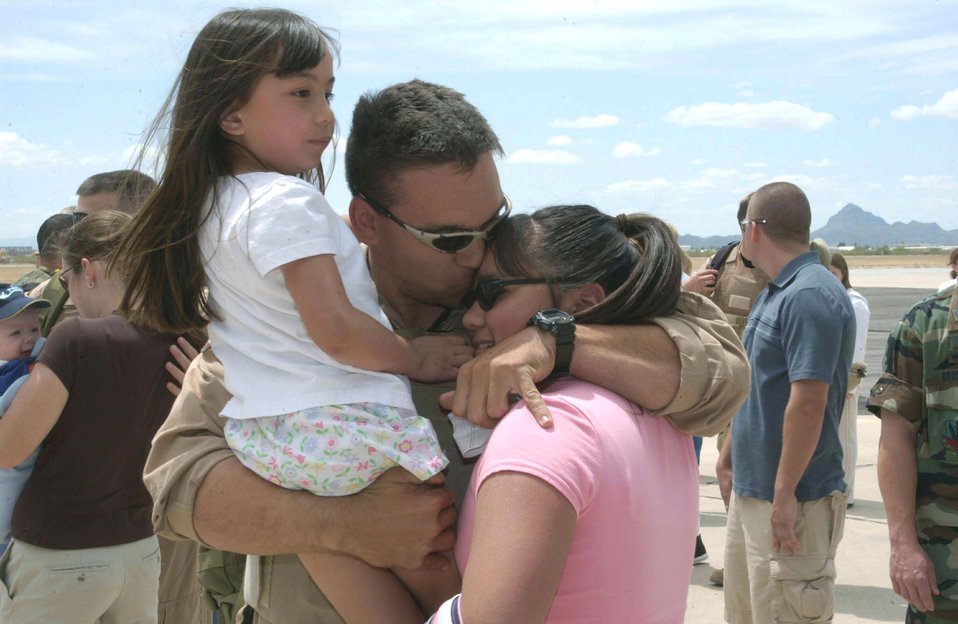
Honey, I'm home

DAVIS-MONTHAN AIR FORCE BASE, Ariz. -- Mackenzie (left) and Alexis Chambers, ages 6 and 11, reunite with their father, 1st Lt. Jason Chambers, upon his return from a deployment supporting Operation Iraqi Freedom. The lieutenant is assigned to the 55th Rescue Squadron here.